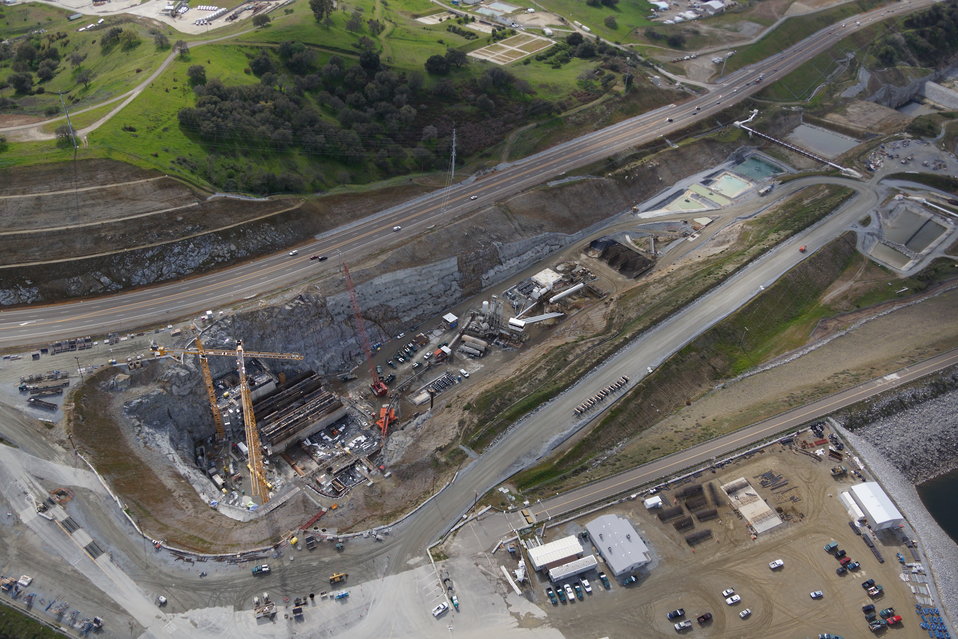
Aerial View of Folsom Dam Auxiliary Spillway

An aerial view shows the entire construction site of the Folsom Dam auxiliary spillway March 6, 2013. Excavation began in 2011 to remove 3.5 million cubic yards of rock and soil from the site. In 2012, the first steel and concrete were placed for the control structure—essentially a second dam—that will stand as tall as the Statue of Liberty when completed. The completed dam and chute will include 350,000 cubic yards of concrete, enough to line up concrete trucks from Sacramento to Los Angeles, and 24 million tons of steel, enough to build two Eiffel Towers. The project is estimated to be completed by October 2017 and is one piece of a larger plan to help the Sacramento region reduce the risk of flooding to a one-in-200 chance for flooding in any given year.